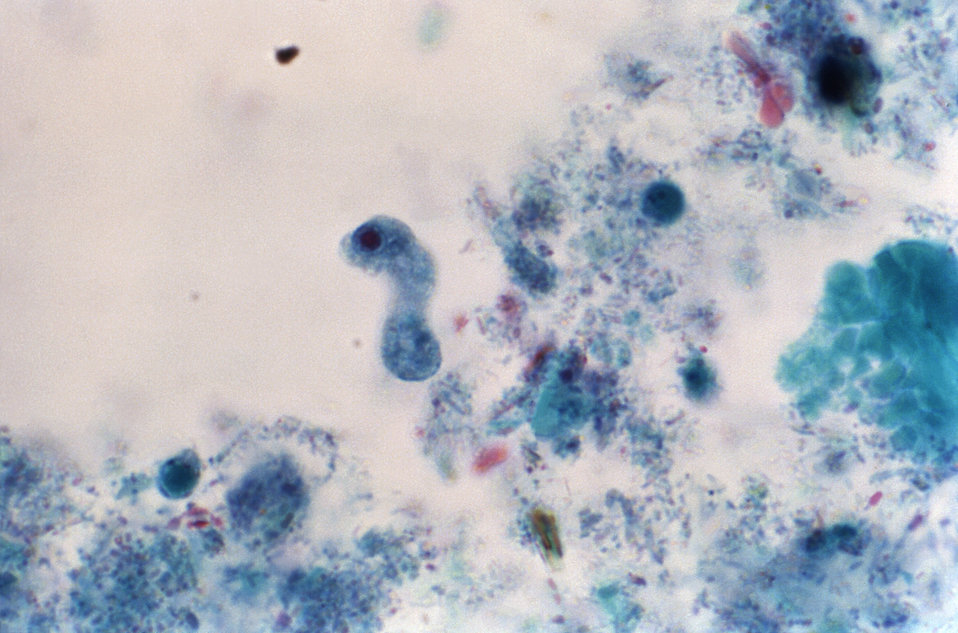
This trichrome-stained photomicrograph revealed the presence of a parasitic Iodamoeba b�ii trophozoite, which contained achromatic granules within its cytoplasm.